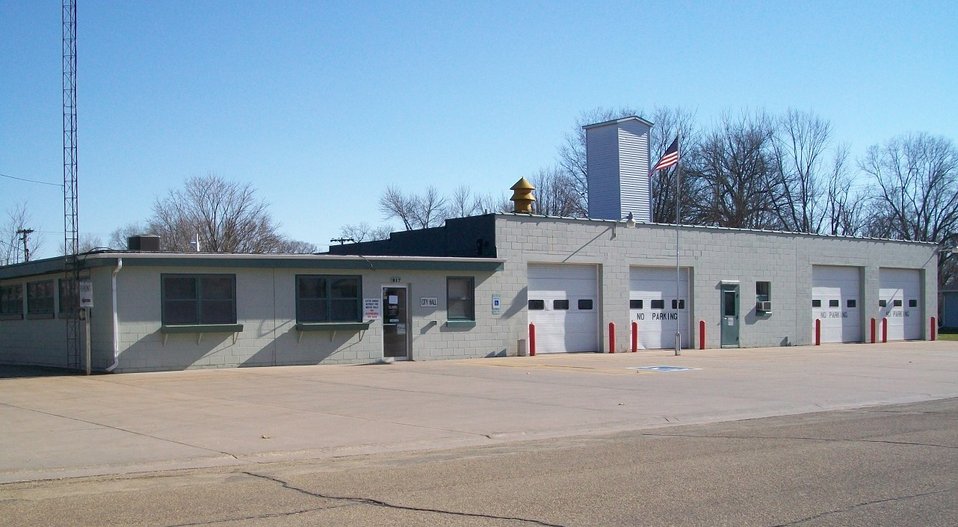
City Hall in Camanche